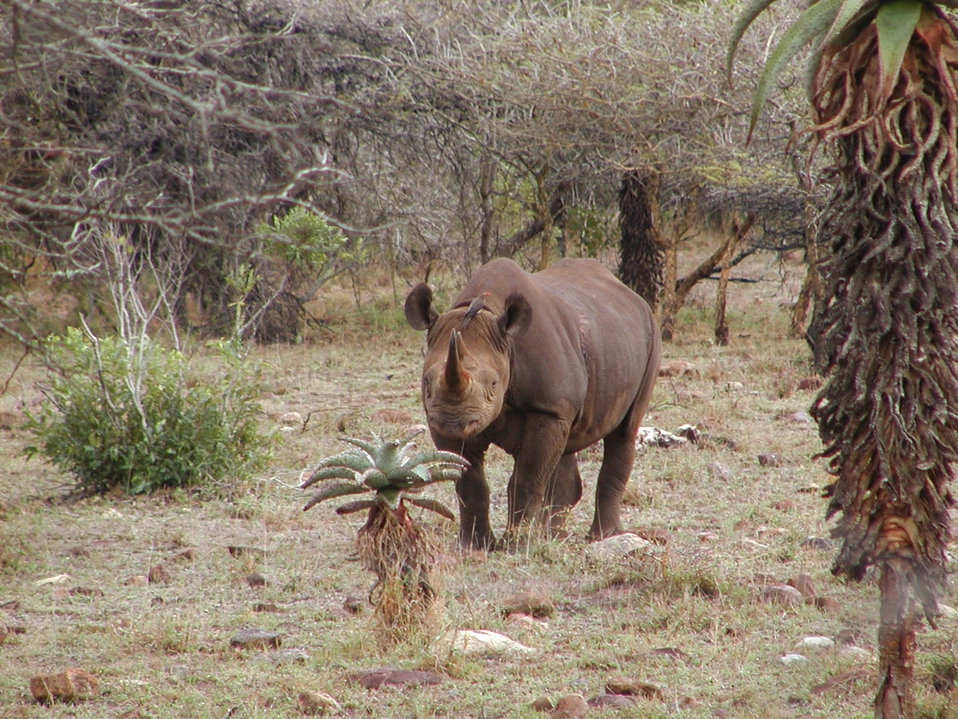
Black rhino in Mkhuze Africa